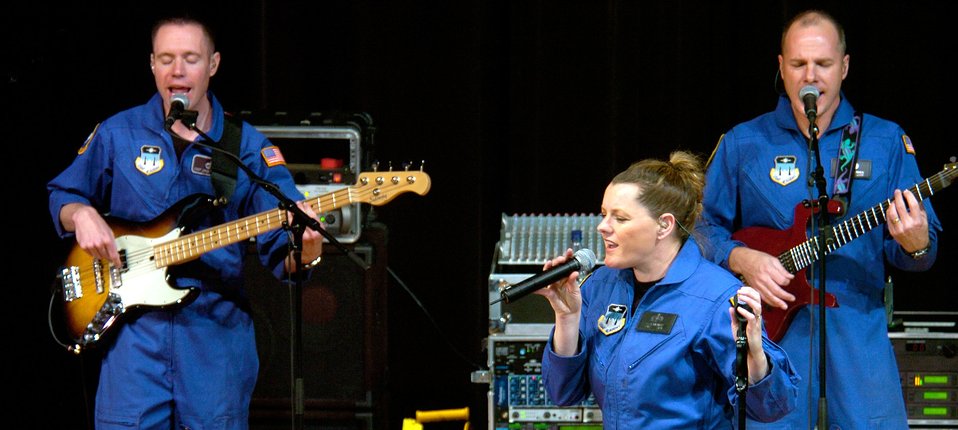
Academy Band

Master Sgt. Jeremy Laukhuf (left), Tech. Sgt. Julie Bradley and Tech. Sgt. Stephen Brannen (right) of the U.S. Air Force Academy Band, Blue Steel, perform for students at Mamaroneck High School in New York Nov. 22. The concert was part of week-long events in New York celebrating the Air Force's 60th Anniversary. The Air Force Academy Band will also perform in the Macy's Thanksgiving Day parade.